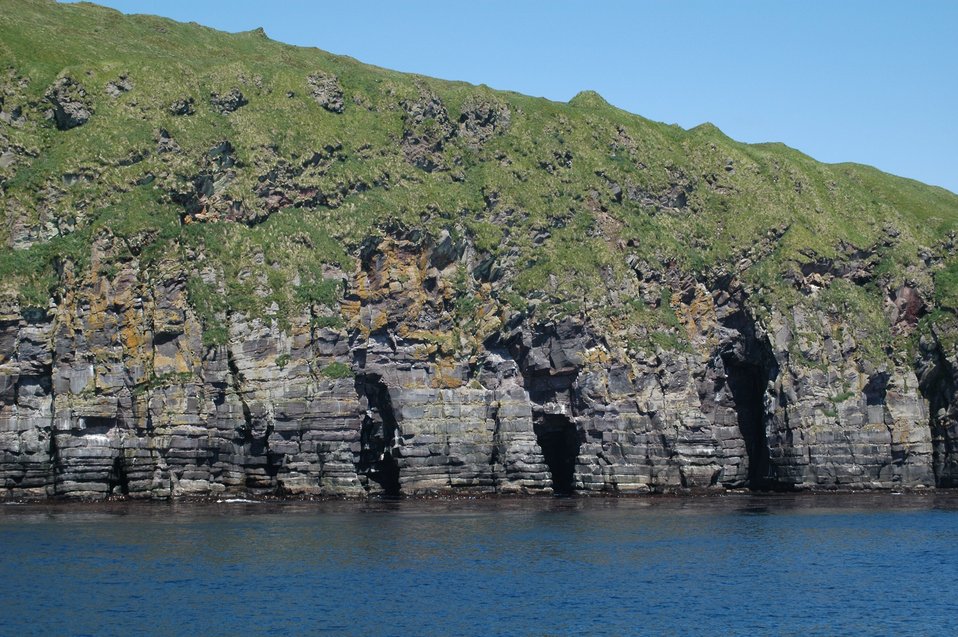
Moss covered volcanic flows